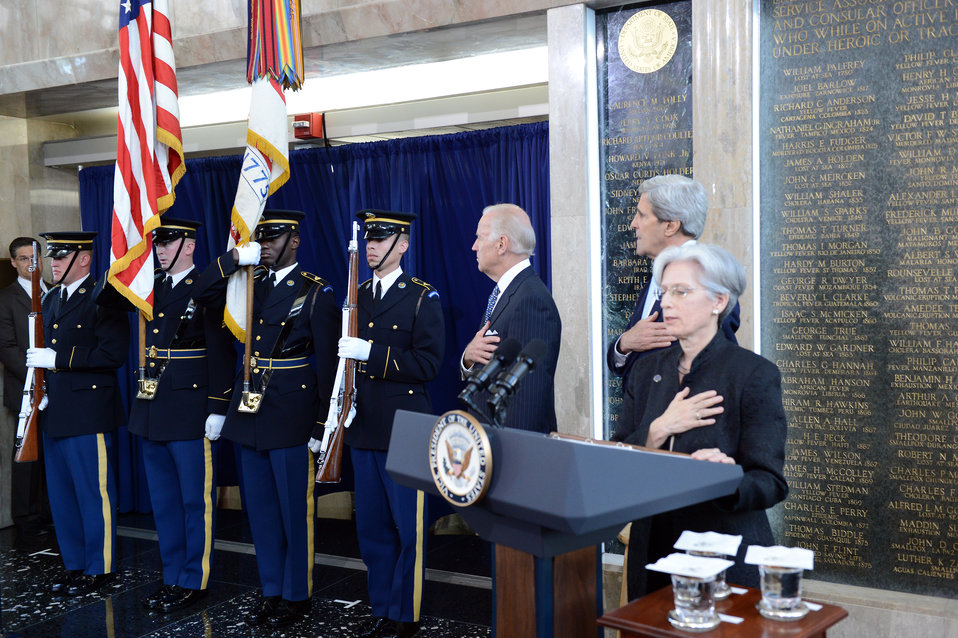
Secretary Kerry, Vice President Biden, and AFSA President Johnson Recite the Pledge of Allegiance

U.S. Secretary of State John Kerry and U.S. Vice President Joseph Biden, with American Foreign Service Association (AFSA) President Susan R. Johnson, recite the pledge of allegiance at the beginning of the AFSA Memorial Plaque Ceremony, where they honor the dedication of colleagues in the Foreign Service, at the U.S. Department of State in Washington, D.C., on May 3, 2013.